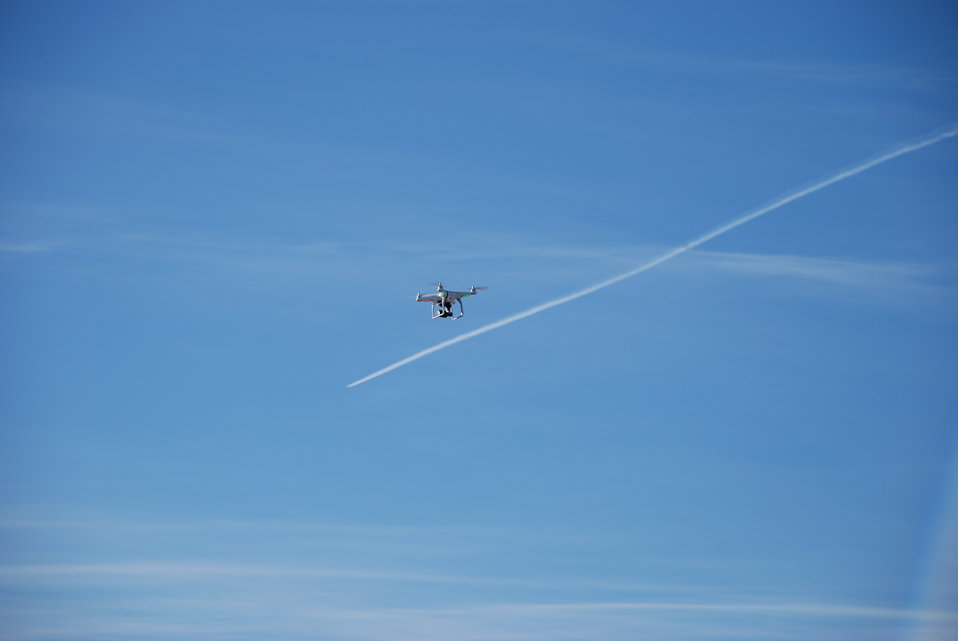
Ivory Crush 2013